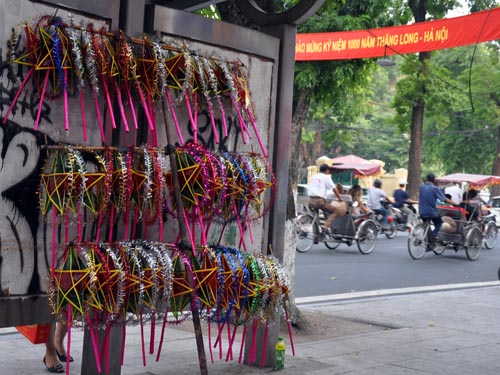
Hanoi dresses up for Mid-Autumn children's festival.